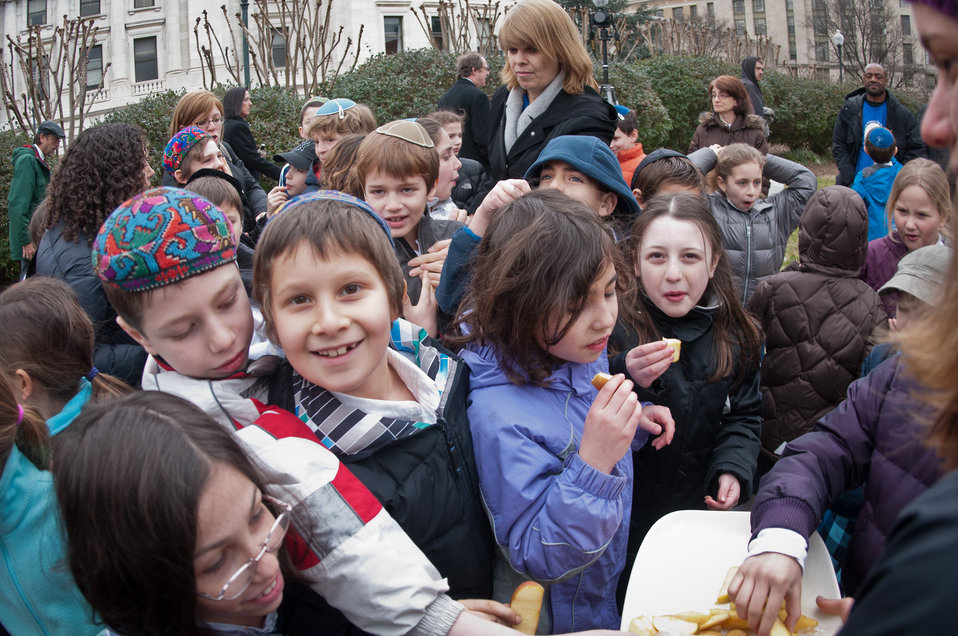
Students from the third grade class of the Jewish Primary Day School of the Nation’s Capital participate in the Jewish celebration Tu B’Shevat “The New Year of the Trees; ”and per custom, partake of the seven types of grains and fruits listed in the Torah (i.e. wheat, barley, figs, pomegranates, olive, and dates). At this event USDA provided apple slices and Jewish elders provided dates and grapes for this Celebration of Tu B’Shevat “The New Year of the Trees” event on the District of Columbia western lawn next to the USDA Headquarters, Whitten Building at 14th Street and Independence Ave SW, Washington, D.C. on Wednesday, February 8, 2012.